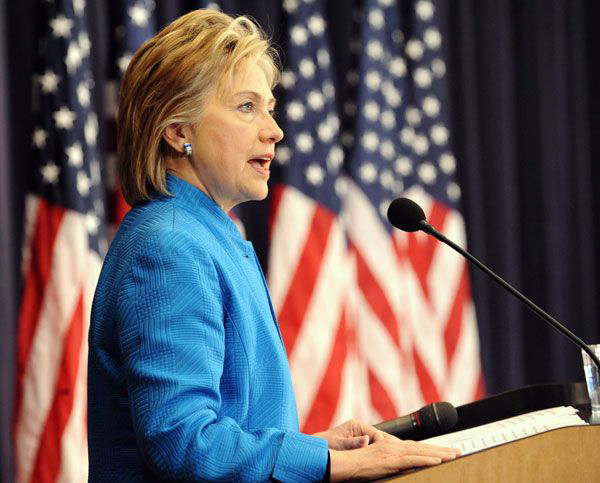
Secretary Clinton on Foreign Affairs Day

U.S. Secretary of State Hillary Rodham Clinton delivers the keynote address of the Town Hall Meeting at Plenary Session of Foreign Affairs Day in the Dean Acheson Auditorium of the U.S. Department of State in Washington, DC May 1, 2009.